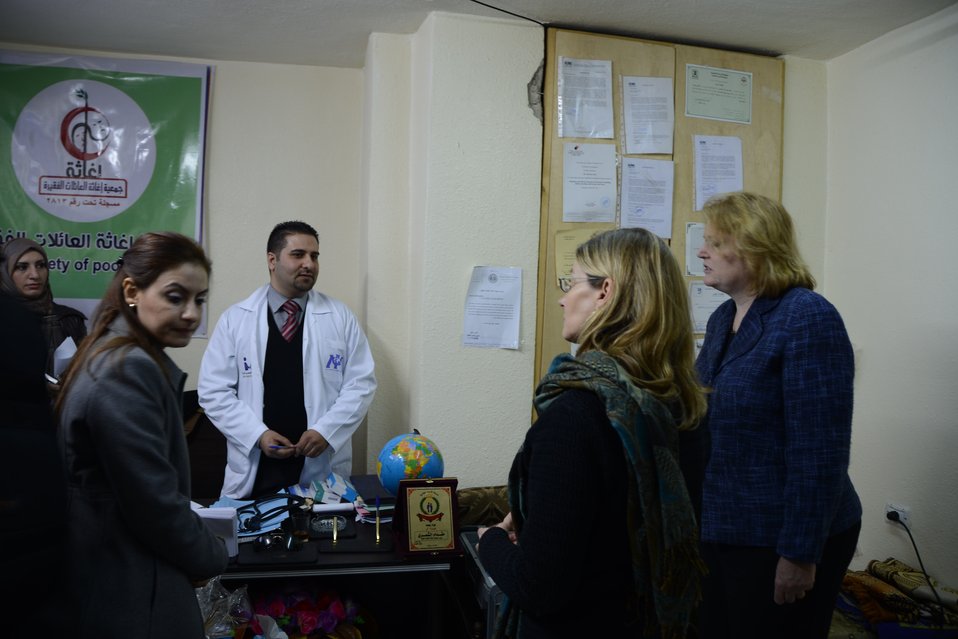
Assistant Secretary Richard and USAID Assistant Administrator Lindborg Visit a Medical Clinic

Assistant Secretary of State for Population, Refugees, and Migration Anne Richard, right; and USAID Assistant Administrator for Democracy, Conflict, and Humanitarian Assistance Nancy Lindborg, second from right; visit a medical clinic that serves Syrian refugees in Jordan on January 28, 2013.